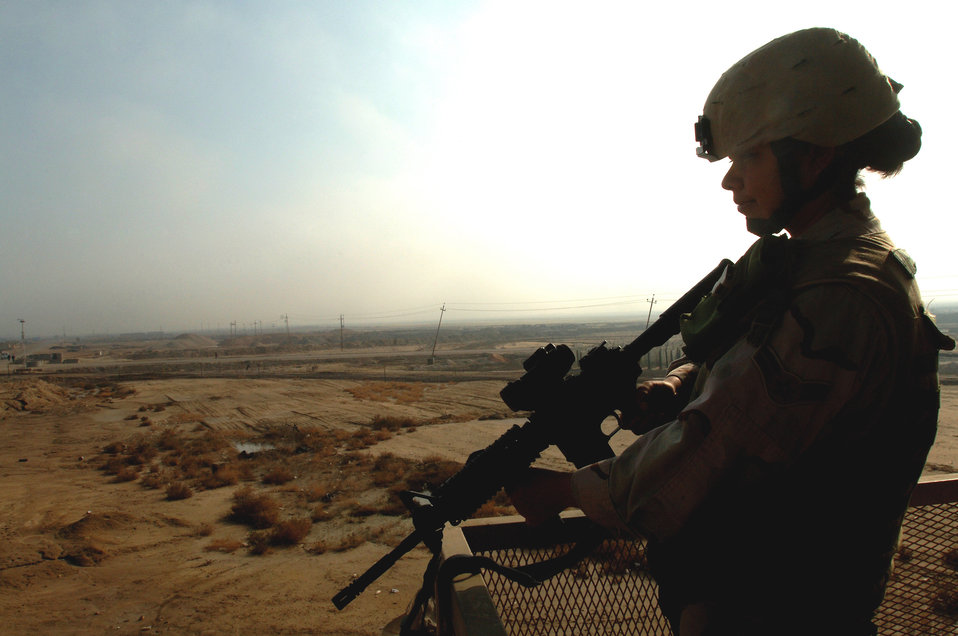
All secure

ALI BASE, Iraq (AFPN) -- Airman 1st Class Carina Sharpe stands guard at an observation tower Feb. 16. Airman Sharpe is with the 407th Expeditionary Security Forces Squadron.